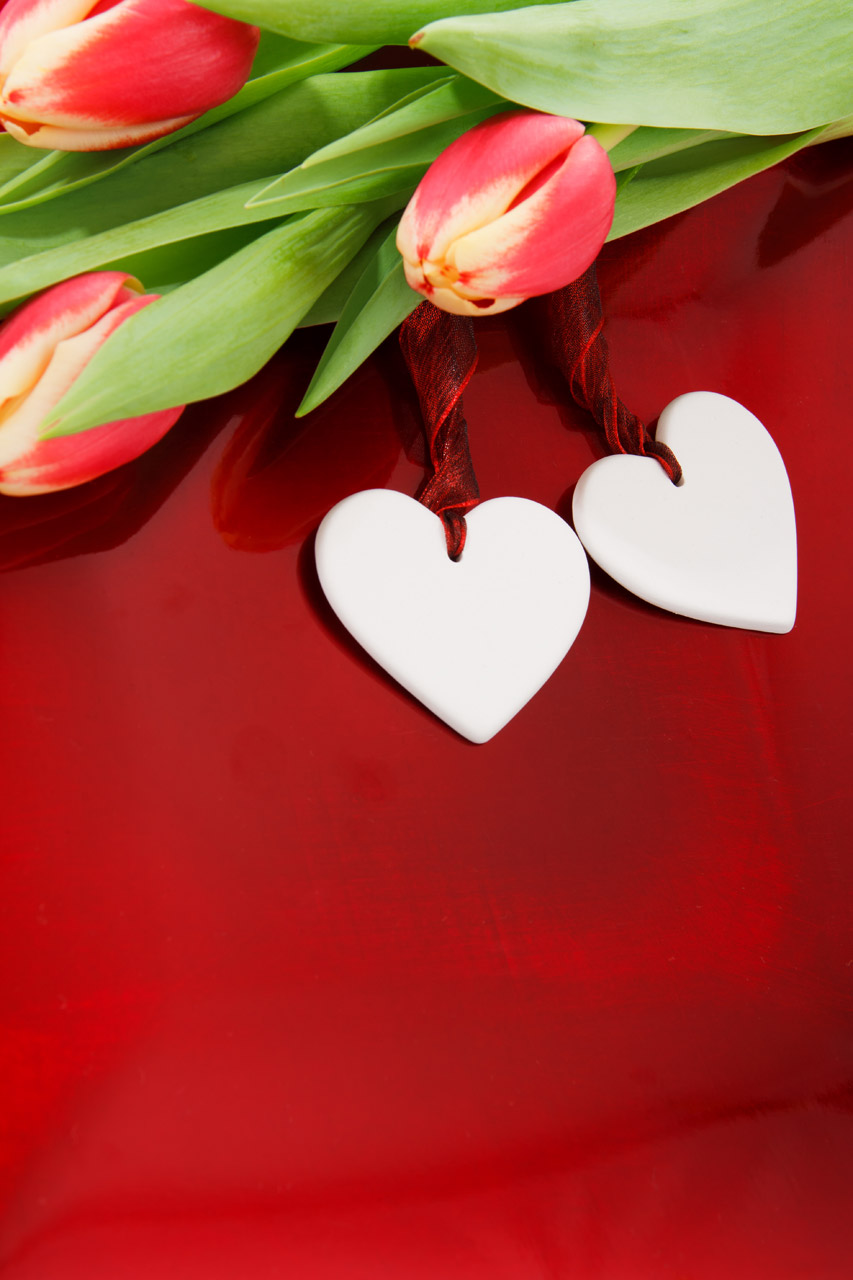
Two hearts and tulips

Two hearts with colorful tulips on red background.